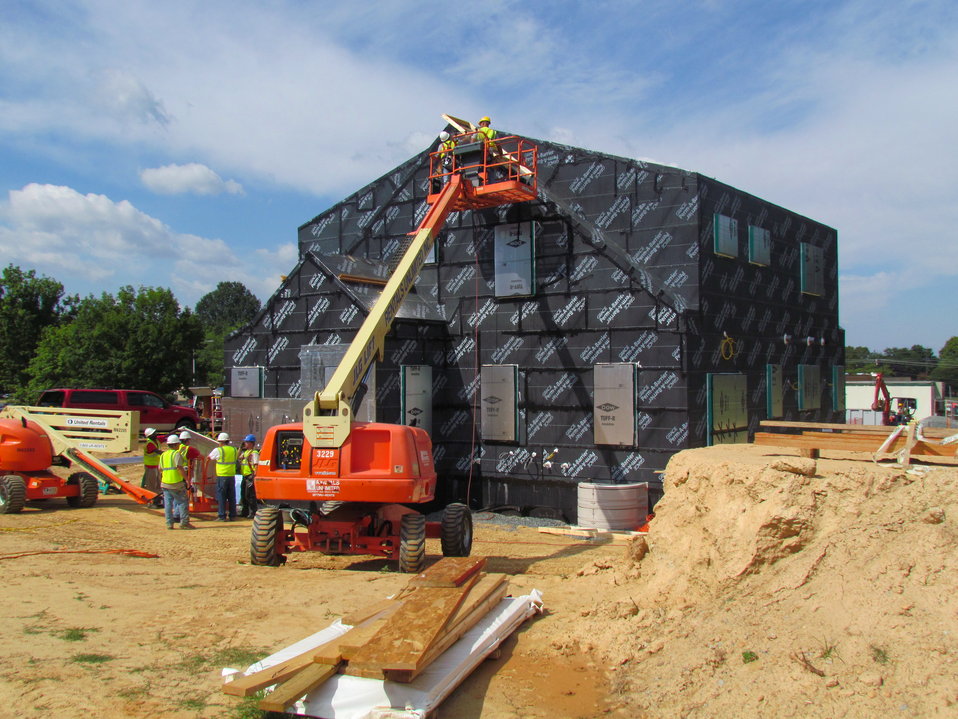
Net-Zero Energy Residential Test Facility - Workmen beginning the installation of the overhang supports on the west side of the facility.